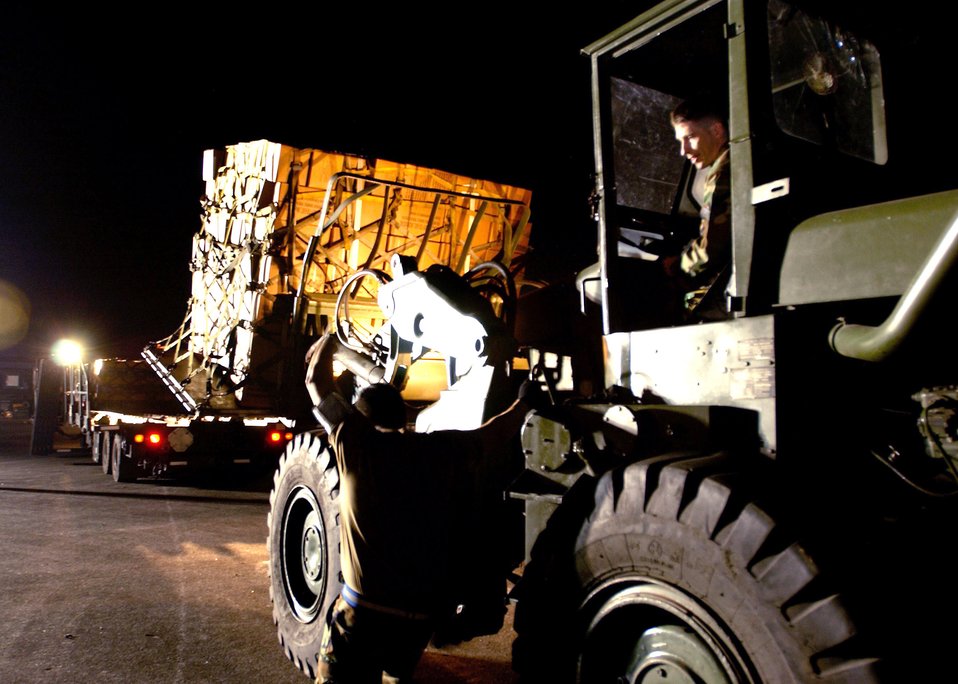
Philippine humanitarian relief

CLARK AIR BASE, Philippines (AFPN) -- Senior Airman James Lawley uses a forklift to load humanitarian supplies Feb. 19. More than 2,000 U.S. and Philippine servicemembers are working together to assist in the humanitarian relief efforts for victims of the Feb. 17 landslide in the village of Guinsaugon on the island of Leyte, Philippines.